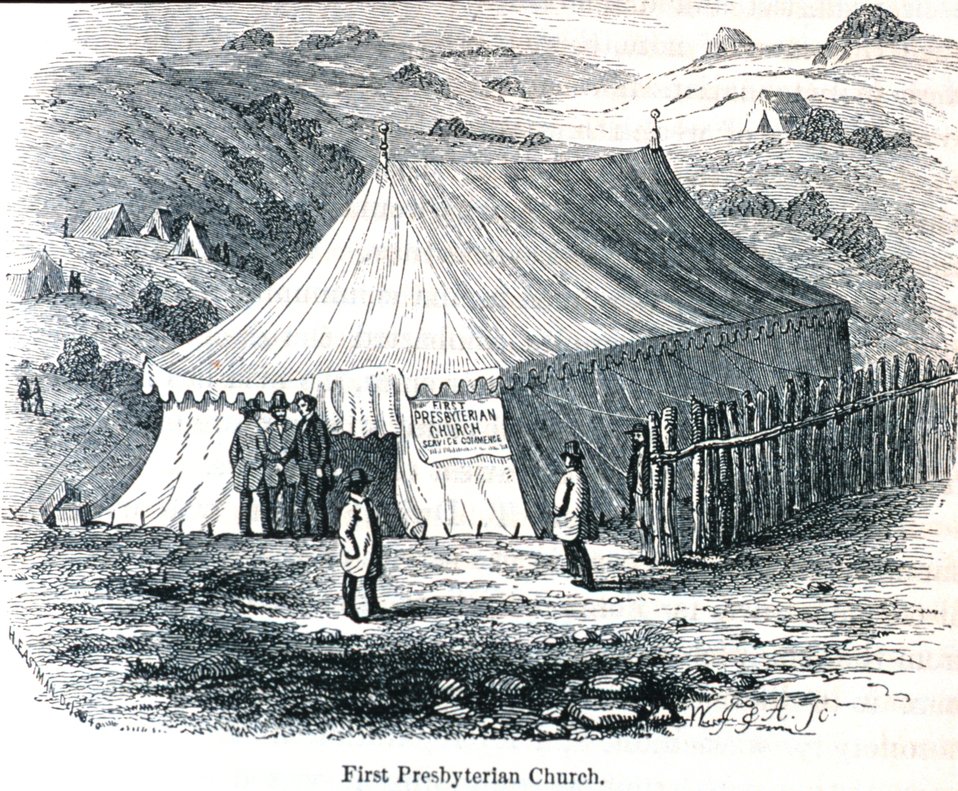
First Presbyterian Church. In: 'The Annals of San Francisco'. Frank Soule, John Gihon, and James Nesbit. 1855. Page 687. D. Appleton & Company, New York. F869.S3.S7 1855.